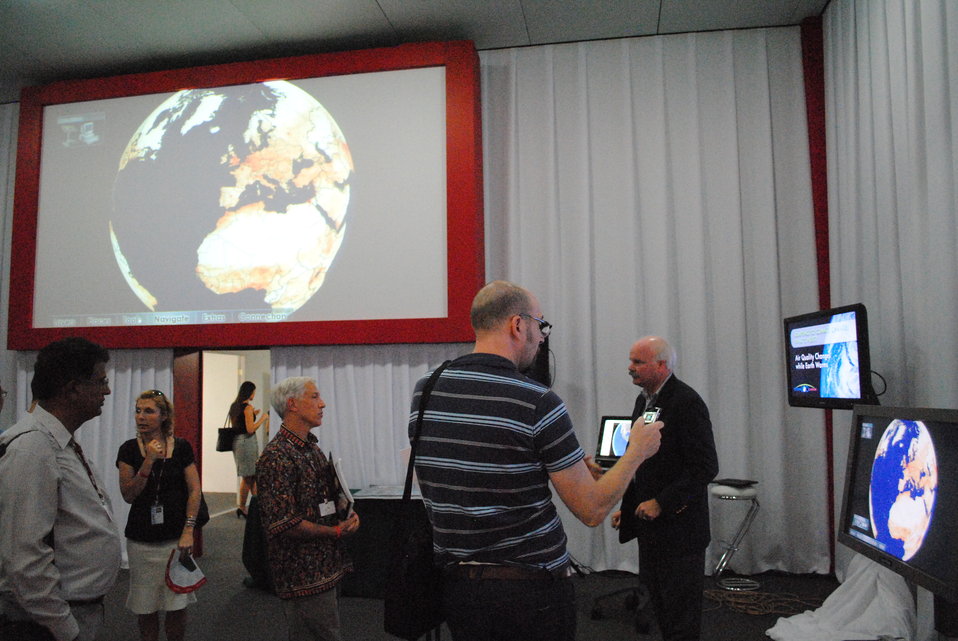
Observers Listen to Dave Jones Present at the Touch Table

Observers listen to Dave Jones, President and CEO of Storm Center Communications, Inc., uses the Envirocast Vision Touch Table to demonstrate how climate change is affecting the United States in the Living Room of the U.S. Center at COP-16 in Cancun, Mexico, on November 30, 2010.